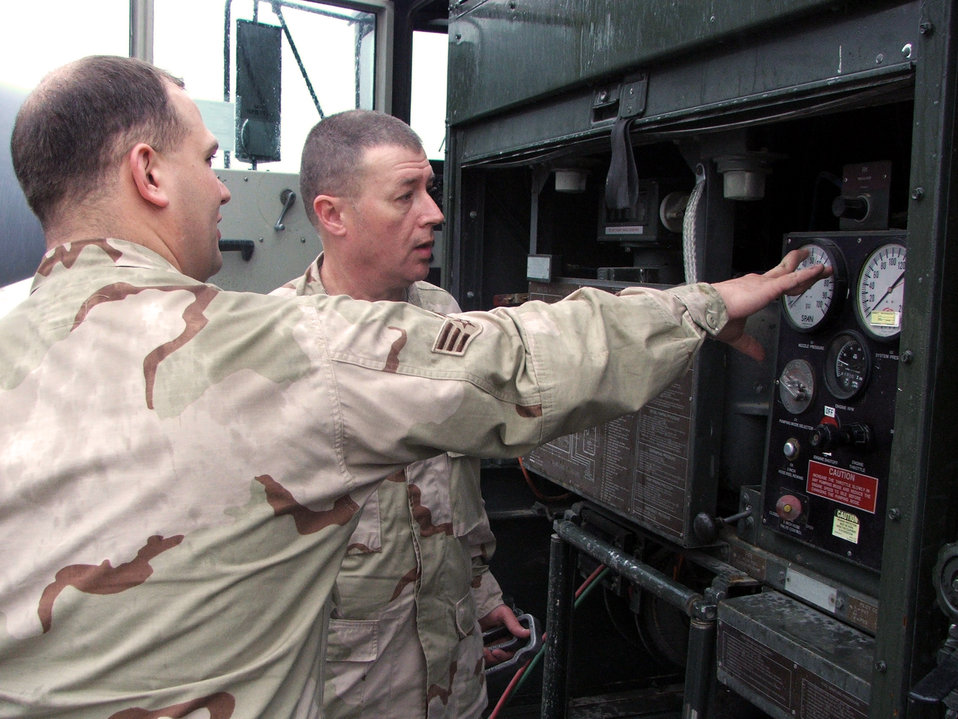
Joint fuels effort allows OEF airlift to keep rolling in Uzbekistan

KARSHI-KHANABAD AIR BASE, Uzbekistan -- Senior Airman Seth Rindo shows Army Sgt. 1st Class Gustave Bloom how a fuels truck is set up to pump fuel to aircraft. Airman Rindo is with the 416th Expedtionary Mission Support Squadron fuels management flight and is deployed from Grand Forks Air Force Base, N.D. Sergeant Bloom is the fuels accountability officer for Logistics Task Force 191 here.